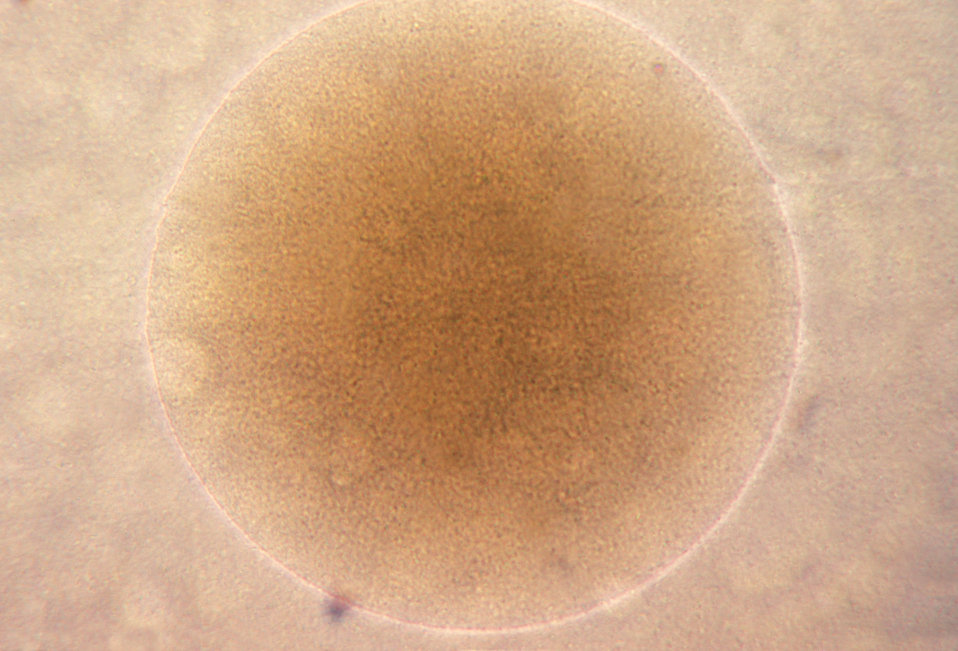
This is a photomicrograph of a T4 colony of Neisseria gonorrhoeae bacteria; Magnified 100X.